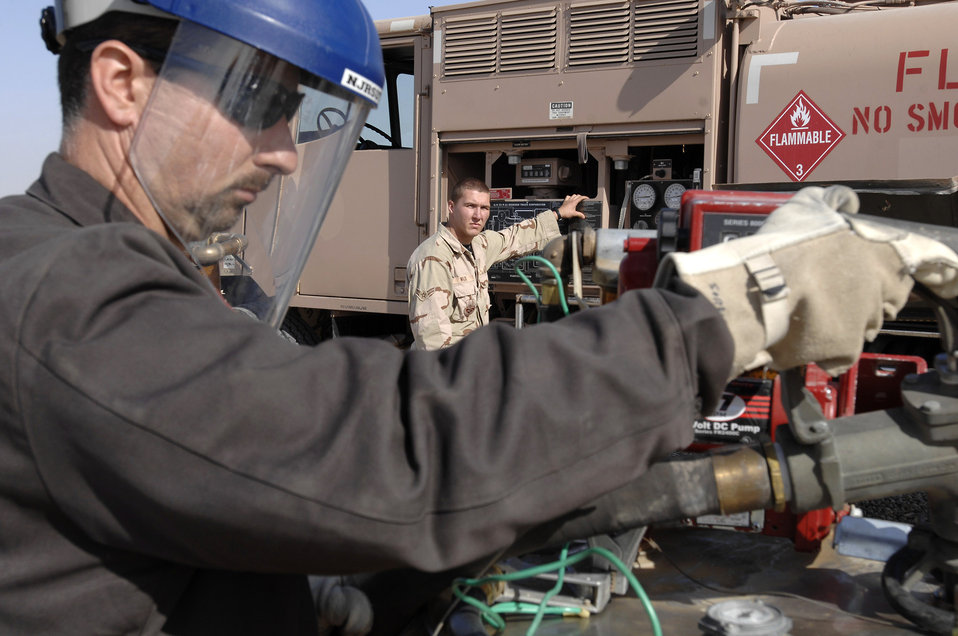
Predator on the move

Mike Sekerak (left) pumps fuel into an auxiliary fuel tank while Airman 1st Class Mack Wilson controls the fuel transfer from the truck Dec. 18 at Ali Base, Iraq. Mr. Sekerak is employed by Battle Space Flight Service out of Creech Air Force Base, Nev. Airman Wilson is assigned to the 407th Expeditionary Logistics Readiness Squadron and is deployed from Kadena Air Base, Japan.